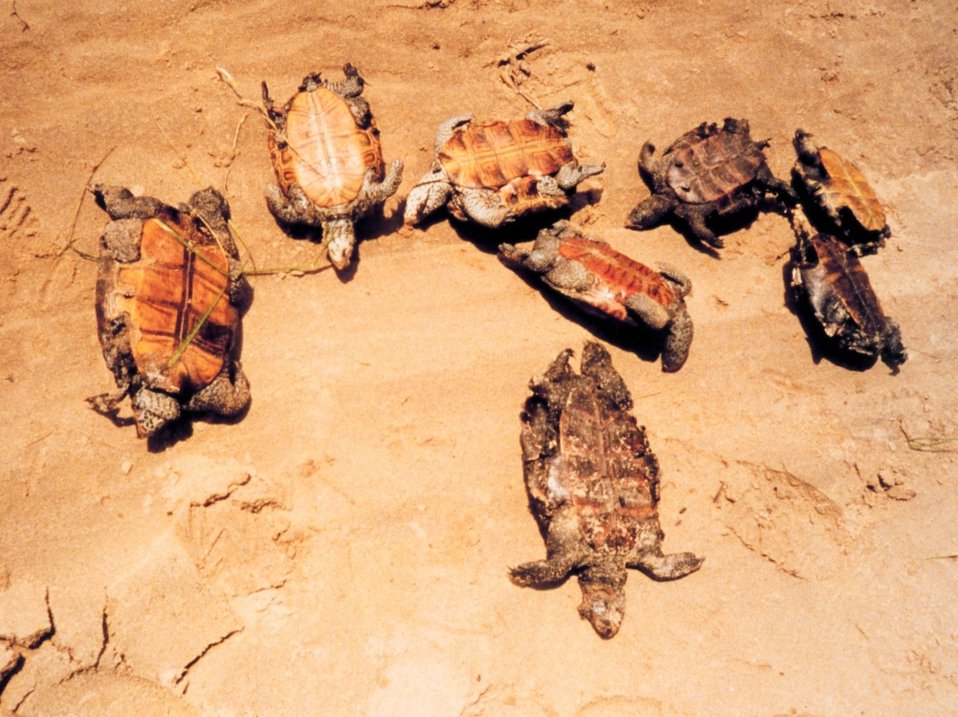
Mass mortality of young diamondback terrapins. Probably drowned in fish traps.